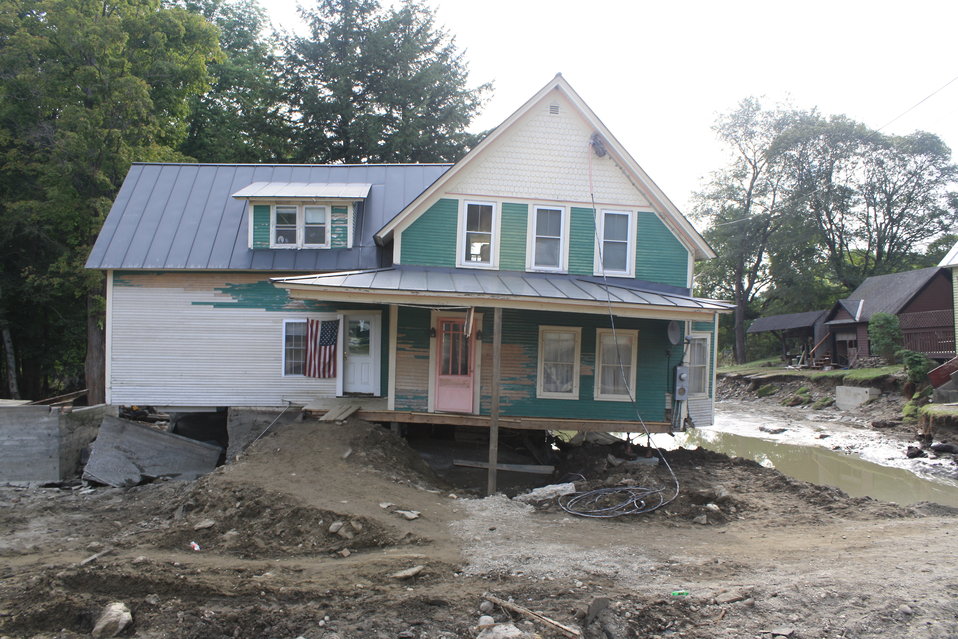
Hurricane Irene damage to road, homes in Bethel, VT

Homes and VT 107 in Bethel, VT near the White River were damaged by quickly rising water during the Hurricane Irene flood event.